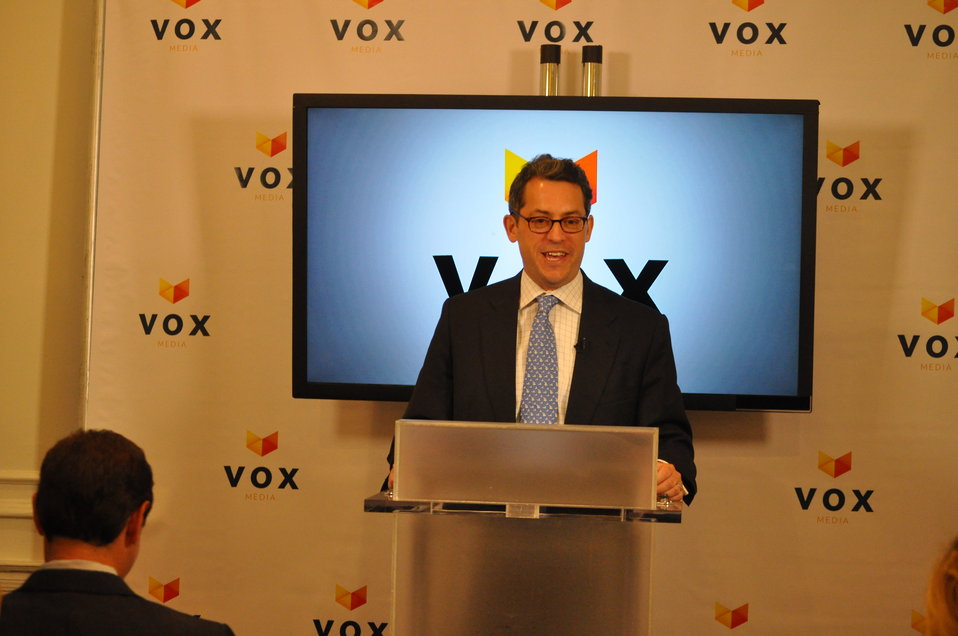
Broadband Challenges and Opportunities, at Vox Media - DSC 0688